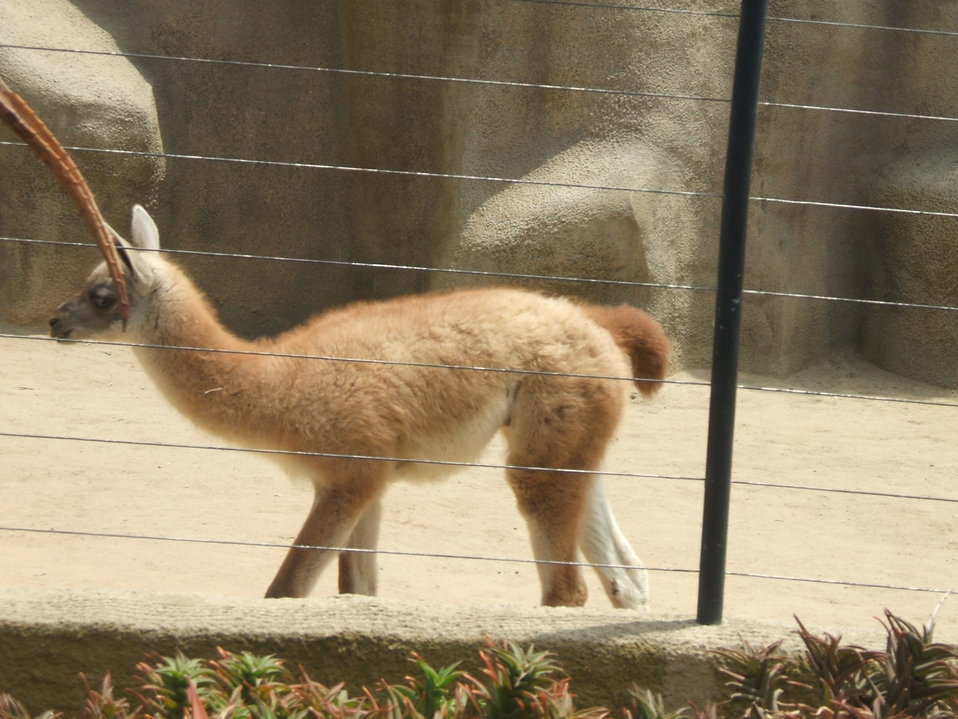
Awww... llama type fuzzy animal.